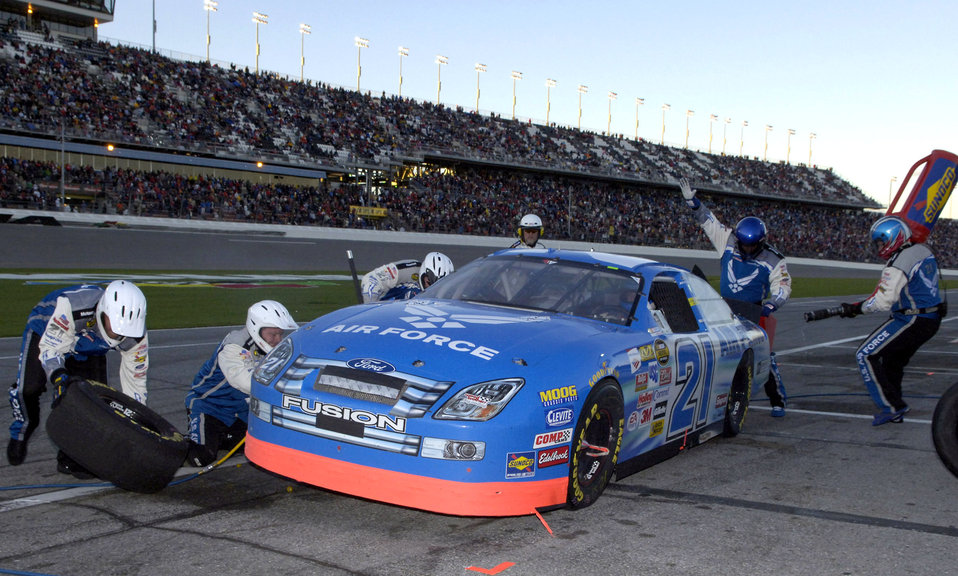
Flying around the track

DAYTONA, Fla. (AFPN) -- The Air Force race team performs a pit stop during the Budweiser Shootout at Daytona International Speedway Feb. 12. The Air Force team finished 14th. Ken Schrader was at the wheel of the Wood Brothers/JTG Racing Team's No. 21 Ford Fusion.